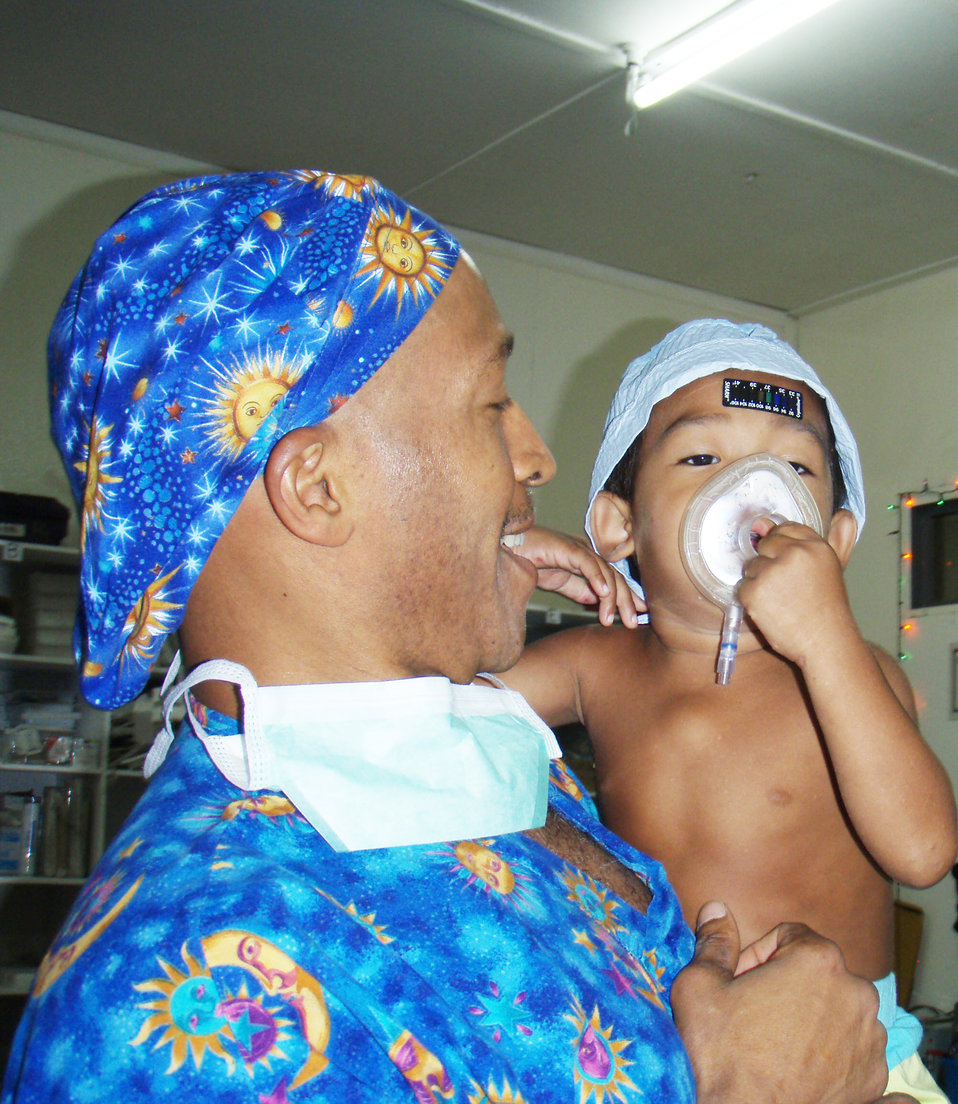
American surgical team making a difference in southern Philippines

Lt. Col. Arnold Stocker comforts a pediatric patient prior to general anesthesia to remove a cyst on his chest Nov. 9, 2009, at Jolo, Philippines. Five Air Force medics operated a fully-staffed trauma facility, providing training and emergency and routine care for Joint Special Operations Task Force-Philippines, servicemembers, the armed forces of the Philippines, and occasionally local residents. Colonel Stocker is a certified registered nurse anesthetist with Joint Special Operations Task Force-Philippines Forward Surgical Team.